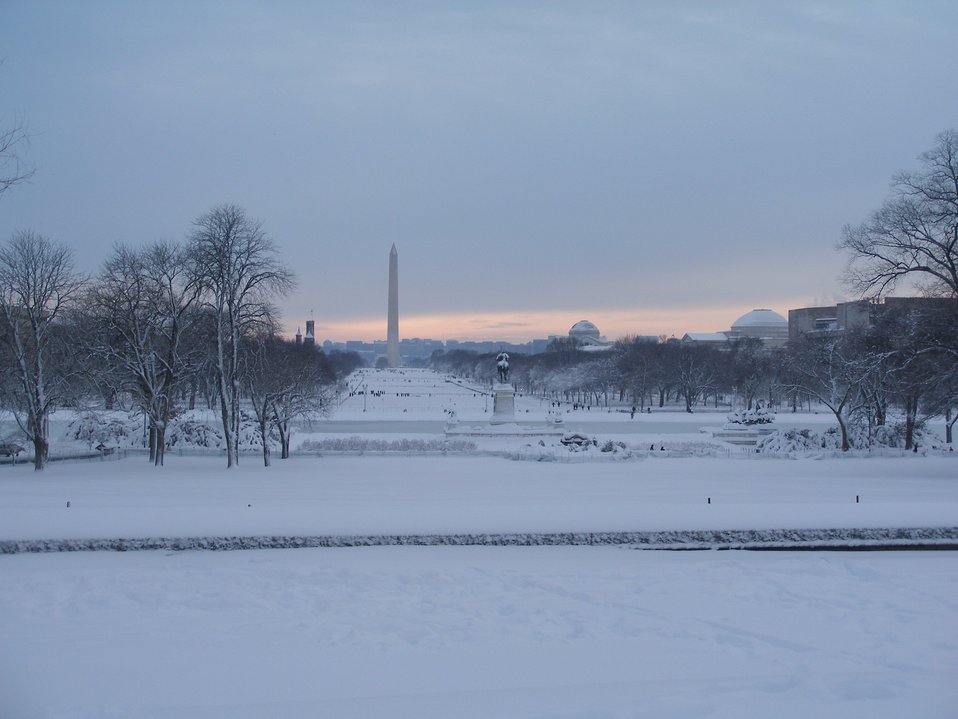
Looking west over the National Mall to the Washington Monument. General Grant on his horse is perpetually surveying the view while the round domes to the right are Smithsonian museums. The top of the Smithsonian Castle is seen to the left.